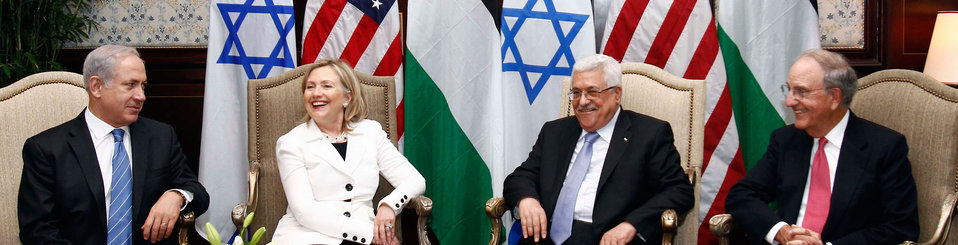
Secretary Clinton and Special Envoy Mitchell Host Direct Talks Between Israeli Prime Minister Netanyahu and Palestinian President Abbas

U.S. Secretary of State Hillary Rodham Clinton, second from left; with U.S. Special Envoy for Middle East Peace George J. Mitchell, fourth from left; hosts direct talks between Palestinian President Mahmoud Abbas, third from left; and Israeli Prime Minister Benjamin Netanyahu, first from left; in Sharm El-Sheikh, Egypt, on September 14, 2010.